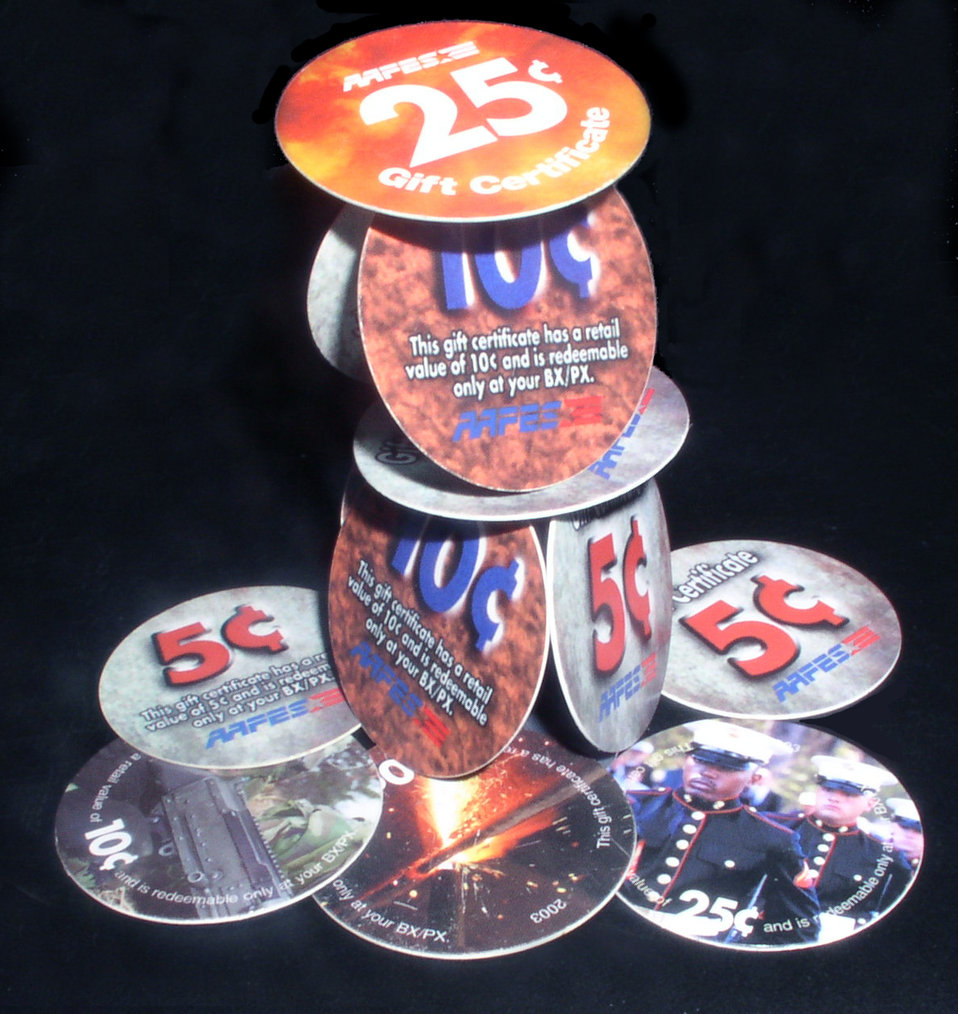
AAFES pogs

TALLIL AIR BASE, Iraq -- Army and Air Force Exchange Service's pogs are becoming collectible items for deployed servicemembers. Because of weight, the U.S. Treasury Department does not ship coins to the Middle East; so, AAFES officials chose to make pogs in denominations of 5, 10 and 25 cents. The pogs are about 1 inch in diameter and feature various military-themed graphics.